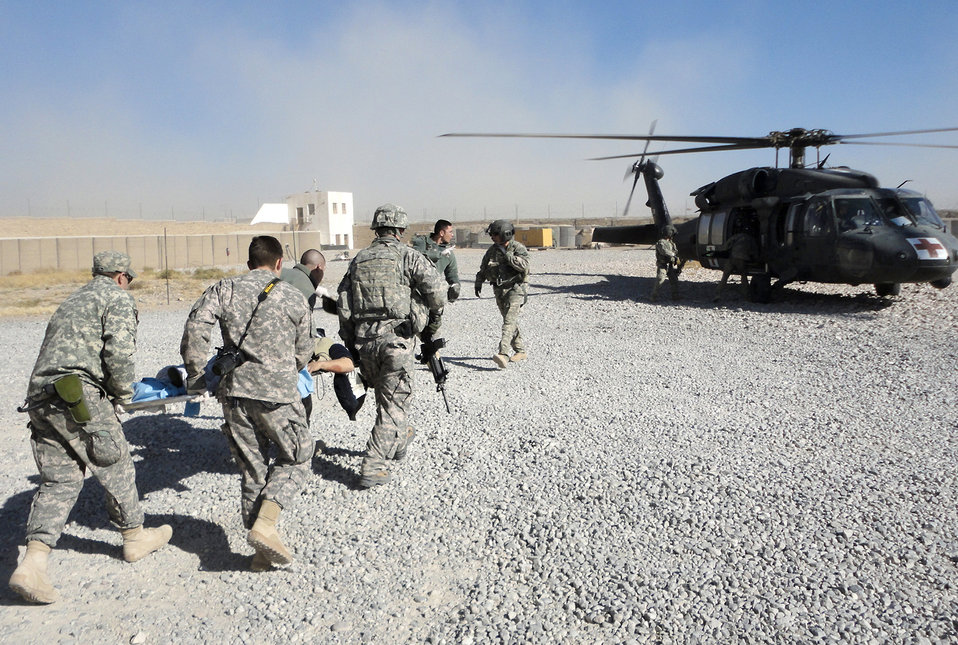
Nine medevaced from PRT Zabul after tragic accident

Airmen and Soldiers from Provincial Reconstruction Team Zabul load a patient onto a medevac helicopter after a civilian bus rolled over, leaving seven dead and more than 30 injured Nov. 30, 2010, just outside Qalat City, Afghanistan. Medical personnel from the PRT were on the scene at Zabul Provincial Hospital to assess patients and provide medical care. Nine patients with potentially life-threatening injuries were flown via helicopter from Forward Operating Base Smart to FOB Lagman, and then on to Kandahar.